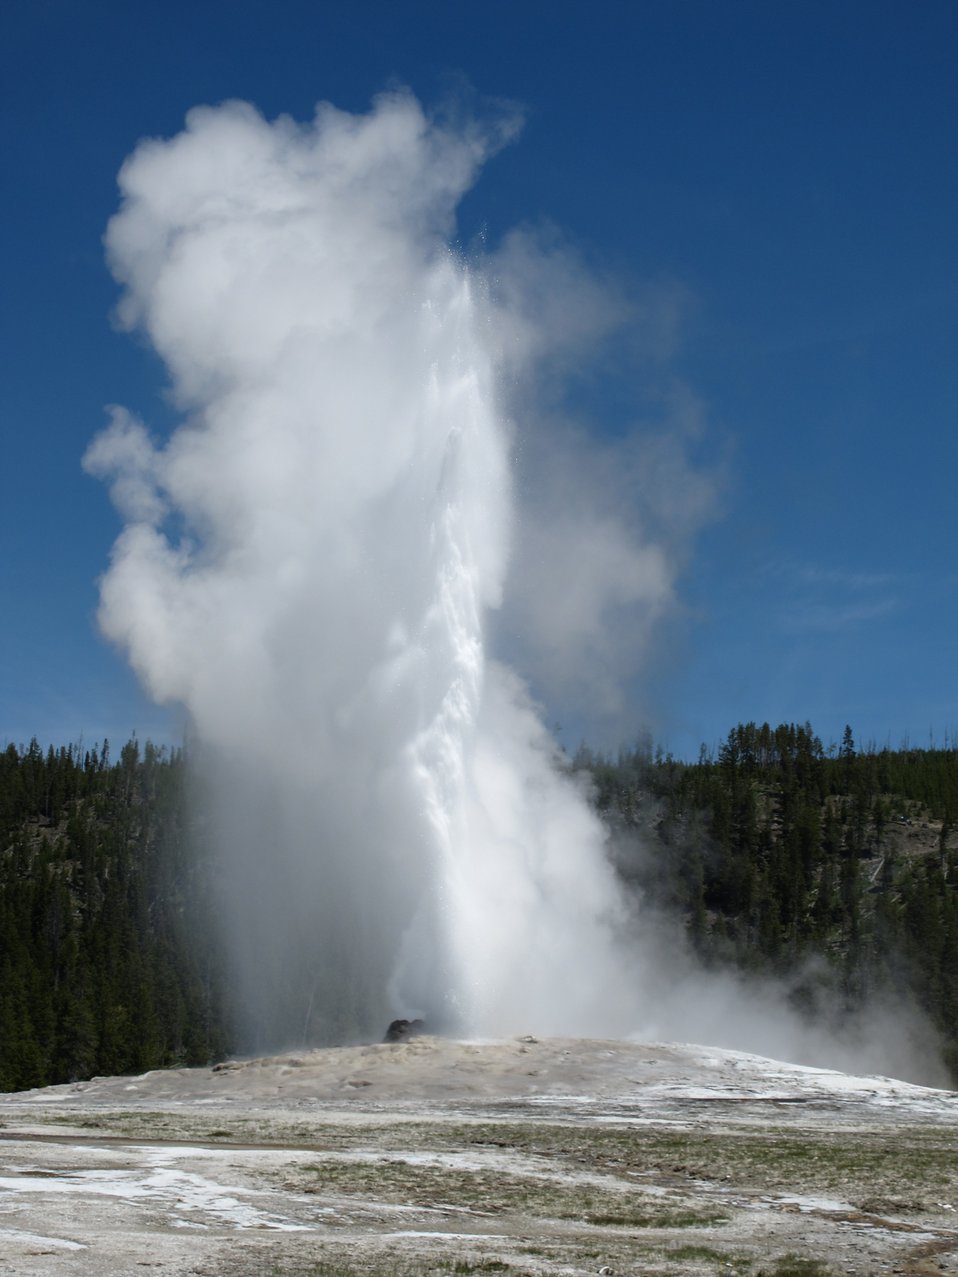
Old Faithful Geyser erupting. Known for its predictability, Old Faithful sends boiling water to a height of 106 to 185 feet about every 90 minutes.